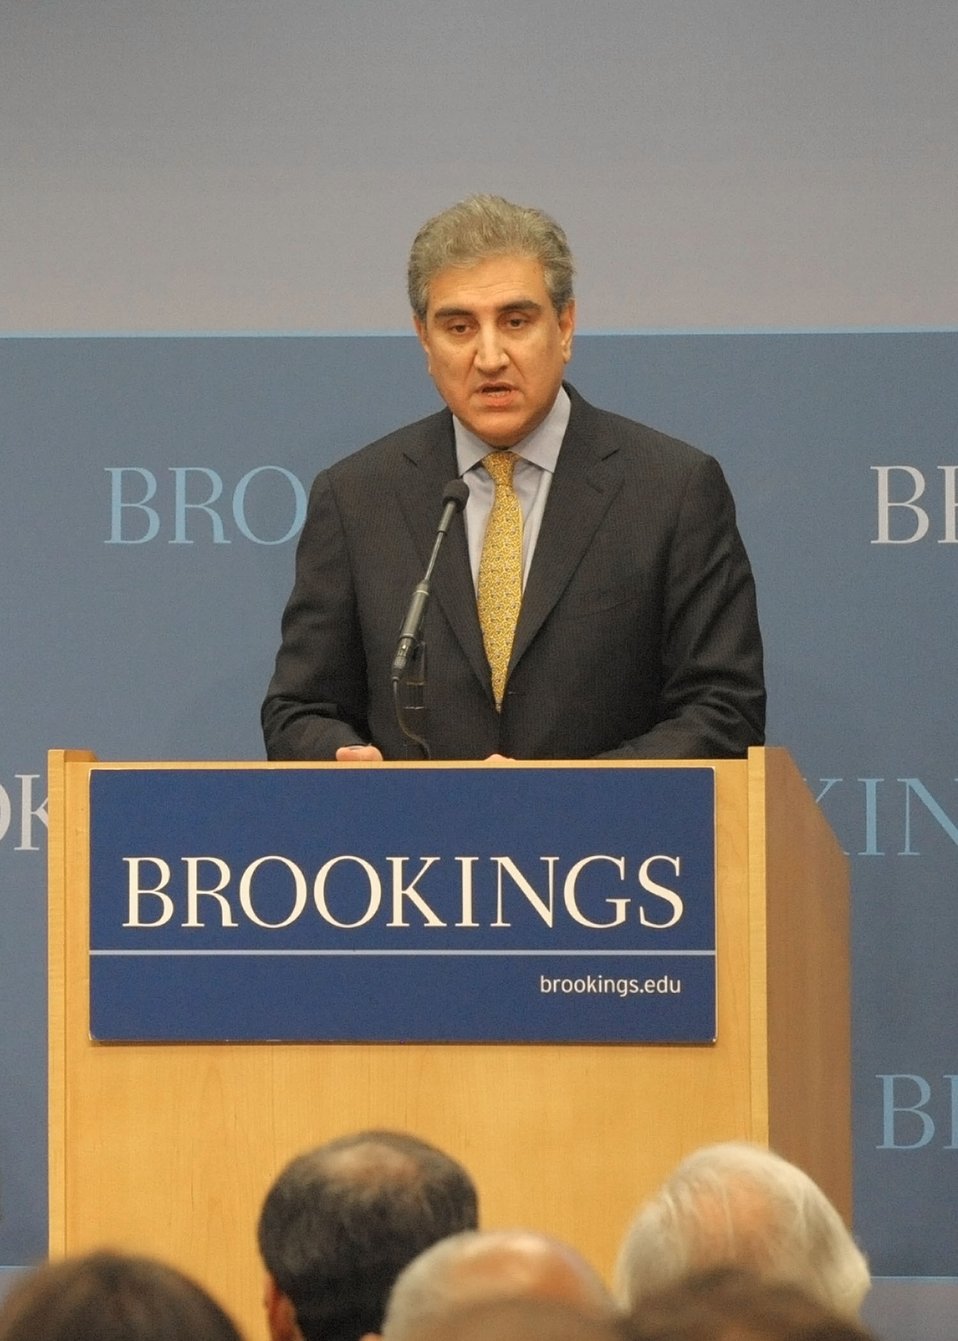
Pakistani Foreign Minister Qureshi delivers remarks at the panel, U.S. and Pakistan: Partners in Development, hosted by Asia Society and Brookings at the Brookings Institution in Washington, D.C., on October 20, 2010.